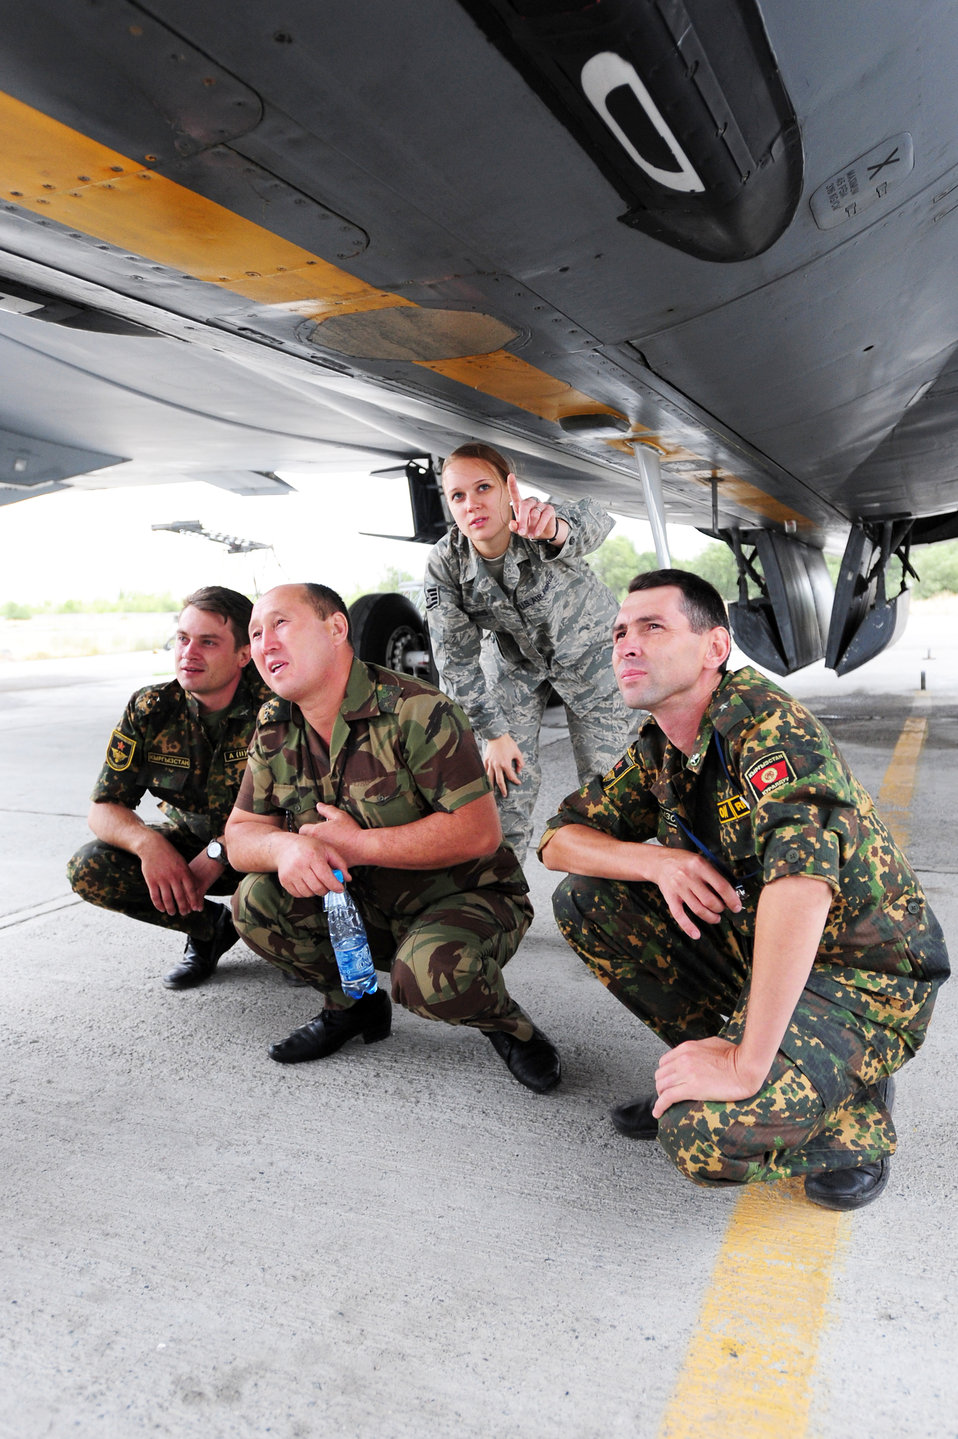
Kyrgyz ministry of defense team shadows Airmen, learns expeditionary maintenance

Staff Sgt. Maria Hudgeons points out lights used during air refueling on a KC-135 Stratotanker to Kyrgyzstan ministry of defense officials Capt. Denis Satir, Lt. Col. Vakhiddulla Toktakhunov and Maj. Andrey Mescheryakov Aug. 25, 2009 during a visit to the Transit Center at Manas, Kyrgyzstan. The Kyrgyz ministry of defense got a firsthand look at maintenance facilities and operations while touring the Transit Center. Sergeant Hudgeons is a 376th Air Expeditionary Wing coalition coordinator & linguist.